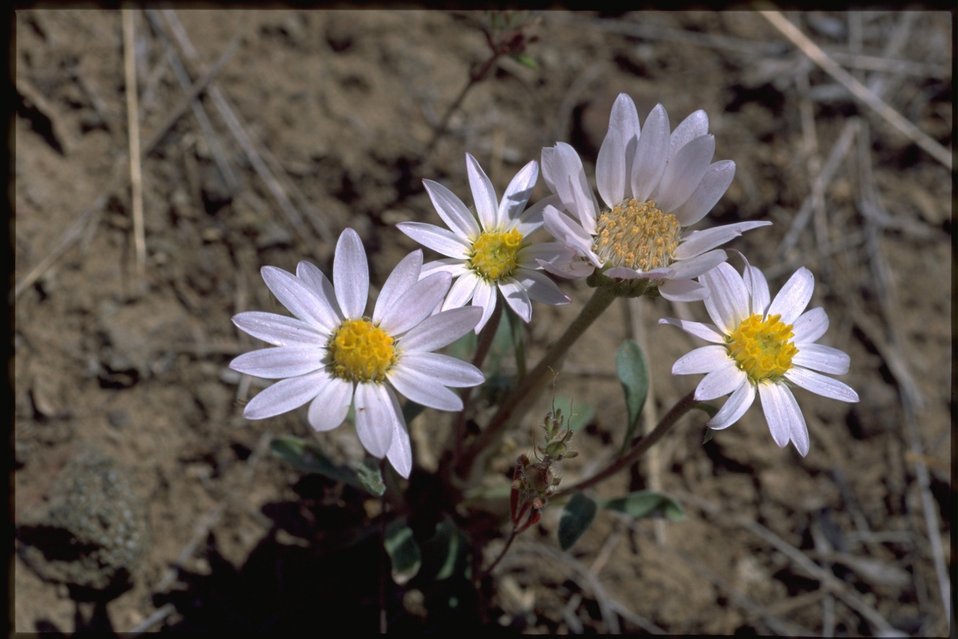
Medium shot of Asteraceae.